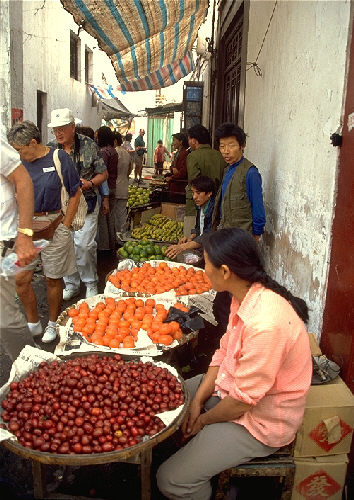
Fruit, vendors, and tourists in Wuhan, China.